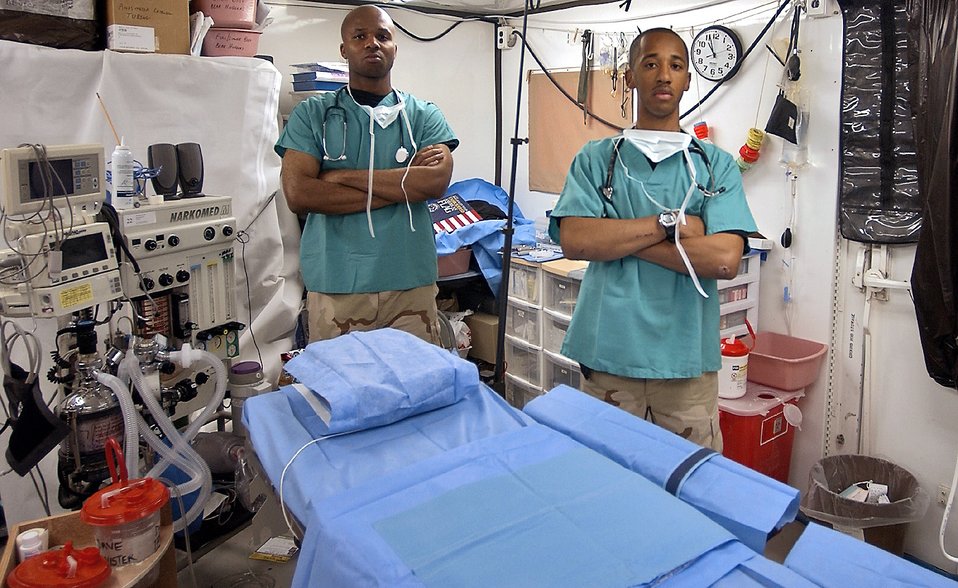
Saving lives, losing lives through eyes of medics

BAGHDAD, Iraq -- Staff Sgts. Bobby Lawson (left) and Charles Berry, along with the doctors, nurses and other medics with the 447th Expeditionary Medical Squadron here have treated more than 3,000 patients during the past five months. Sergeants Berry and Lawson are deployed from Maxwell Air Force Base, Ala.